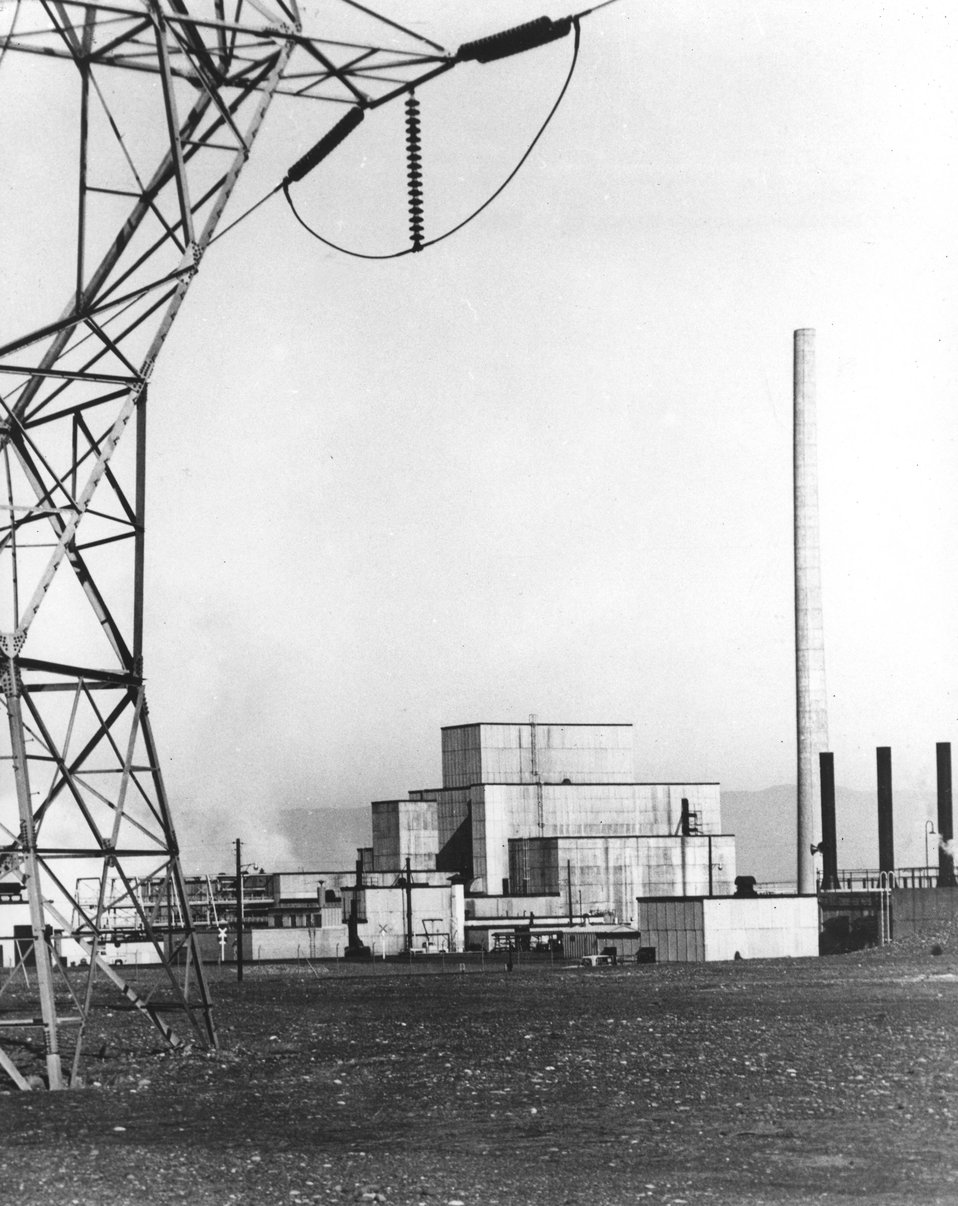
Reactor area, at Richland, Washington. c. 1965